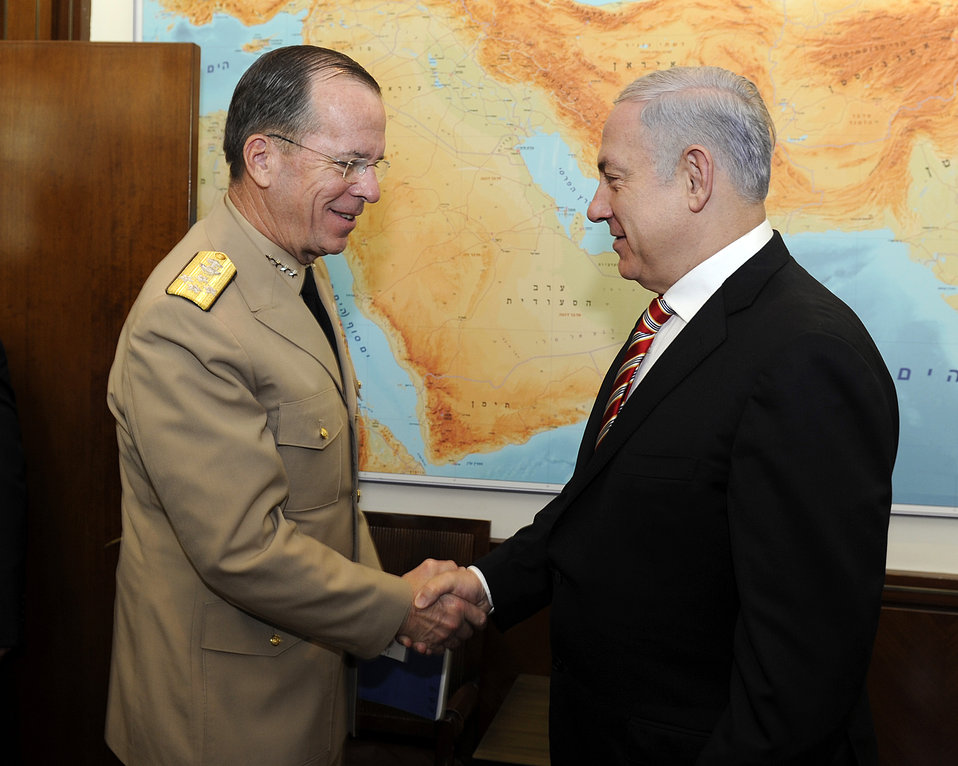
Admiral Mullen Shakes Hands With Israeli Prime Minister Netanyahu

Admiral Michael Mullen, Chairman of the Joint Chiefs of Staff of the U.S. Military, shakes hands with Israeli Prime Minister Benjamin 'Bibi' Netanyahu, in Jerusalem on July 19.